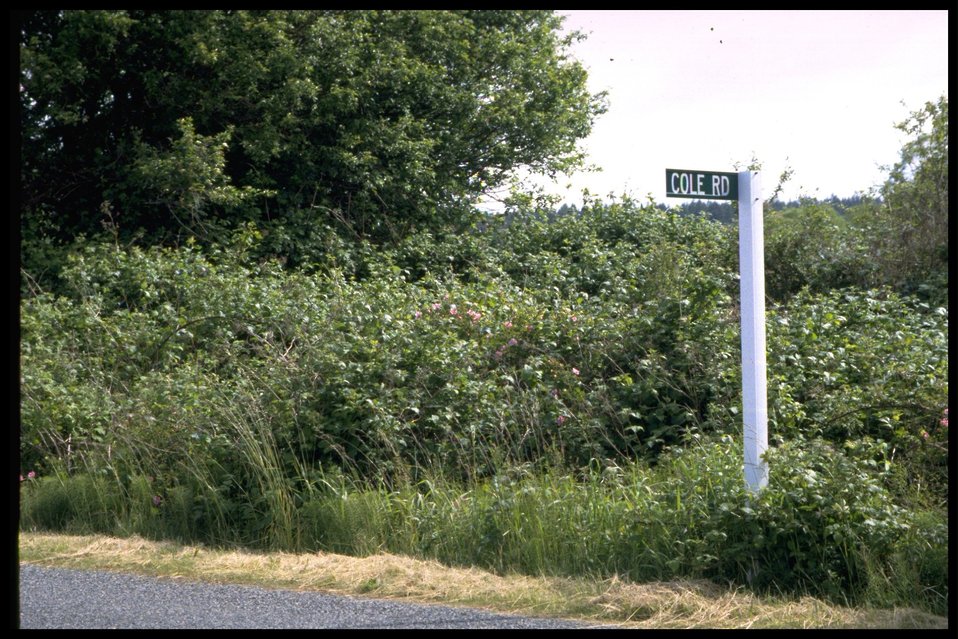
Cole Road street sign near the Chadwick Hill Marsh.